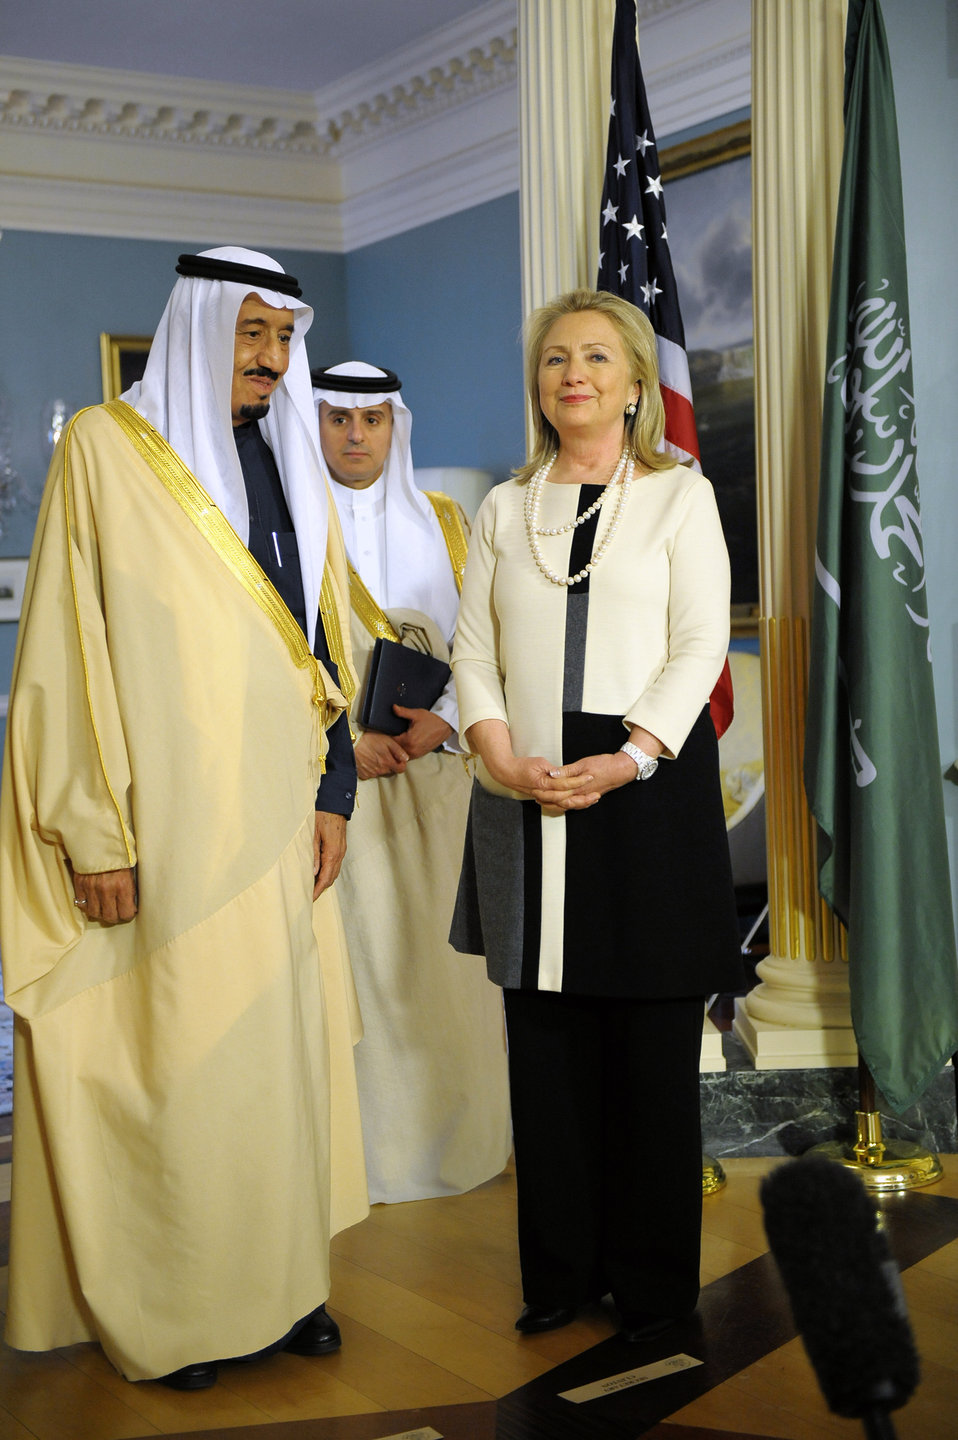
Secretary Clinton Poses With Saudi Arabian Defense Minister Salman

U.S. Secretary of State Hillary Rodham Clinton poses with Saudi Arabian Defense Minister Prince Salman bin Abdul-Aziz Al Saud at the U.S. Department of State in Washington, D.C. on April 12, 2012.